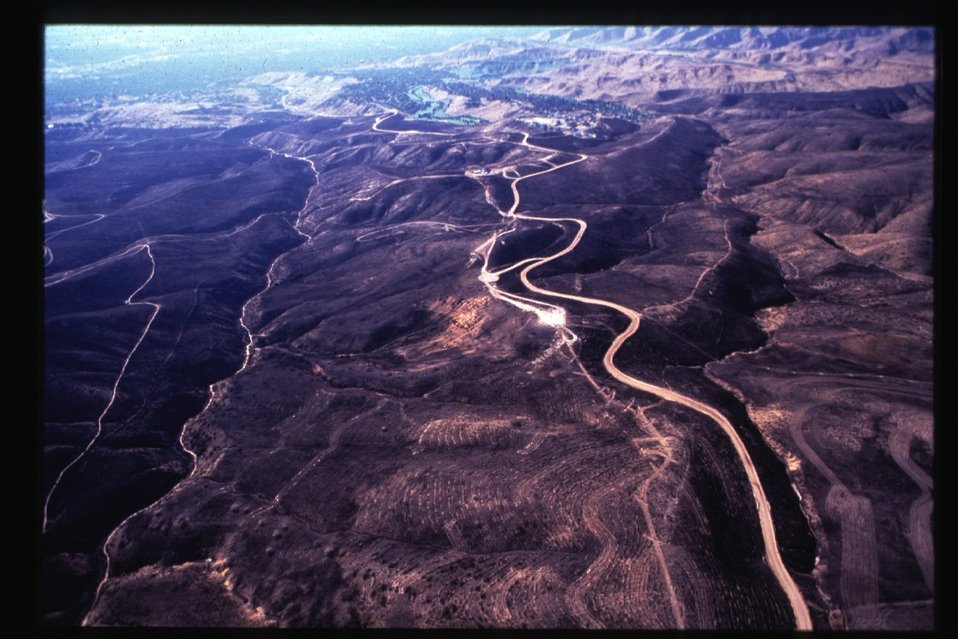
8th Street Fire Boise Front Aerial Foothills Four Rivers Field Office LSRD Lower Snake River District